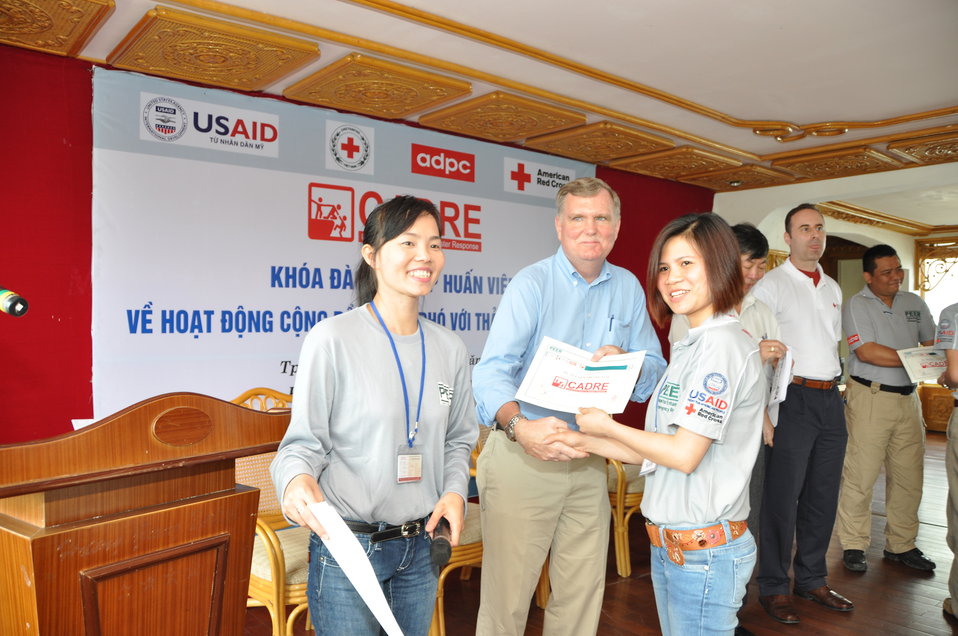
USAID Program Officer Director Michael Foster awards certificates to Red Cross workers.